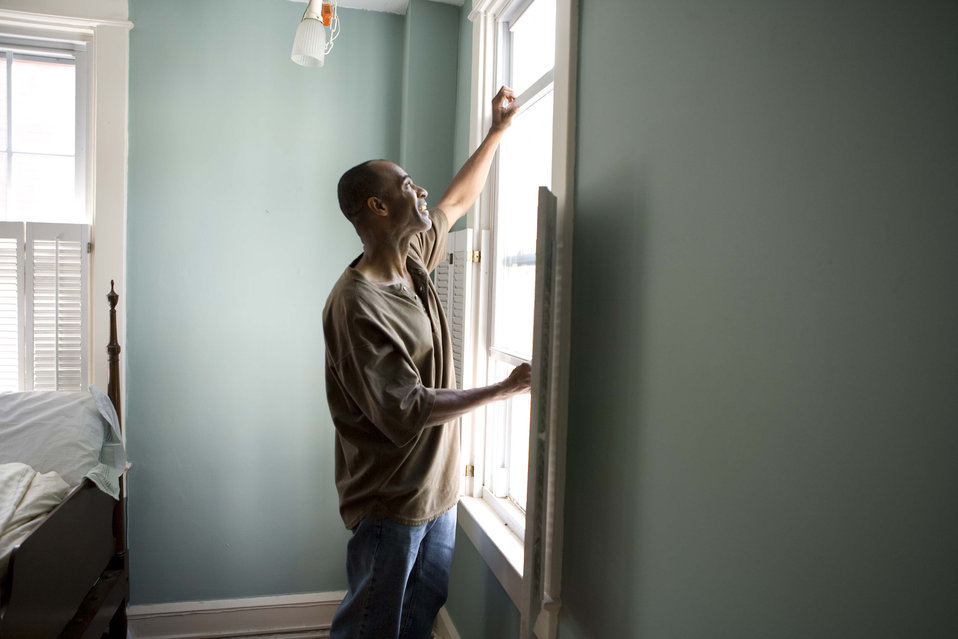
When renovating a home, you should use a damp sponge or cloth to clean dust collected on a window sill, as the dust may contain asbestos or lead-based paint. Home maintenance is an ongoing process for any homeowner, and here we see an African-American man as he was preparing a window in his home for a general cleaning.